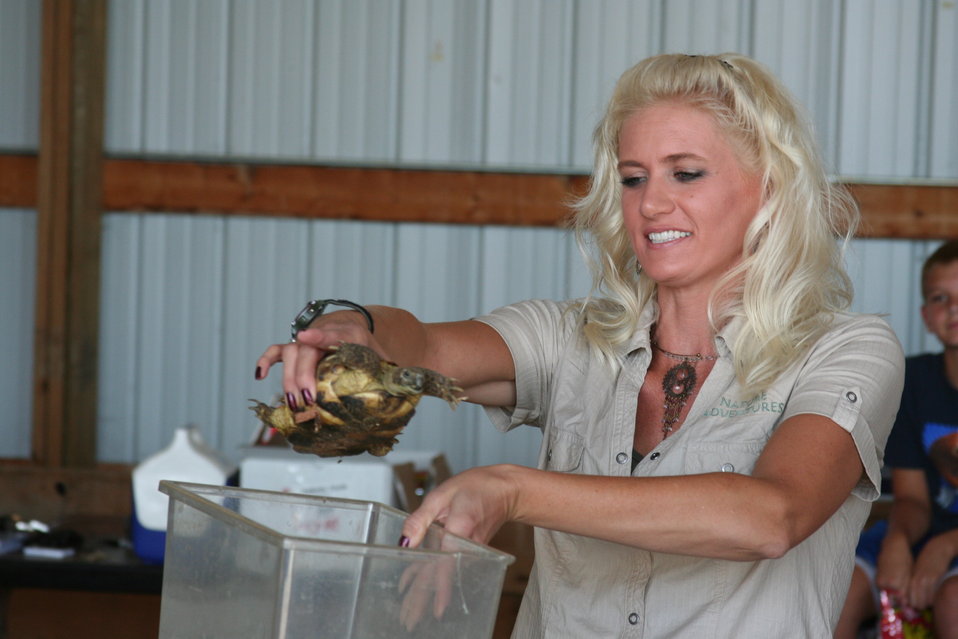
2011 Huron Prairie Fest